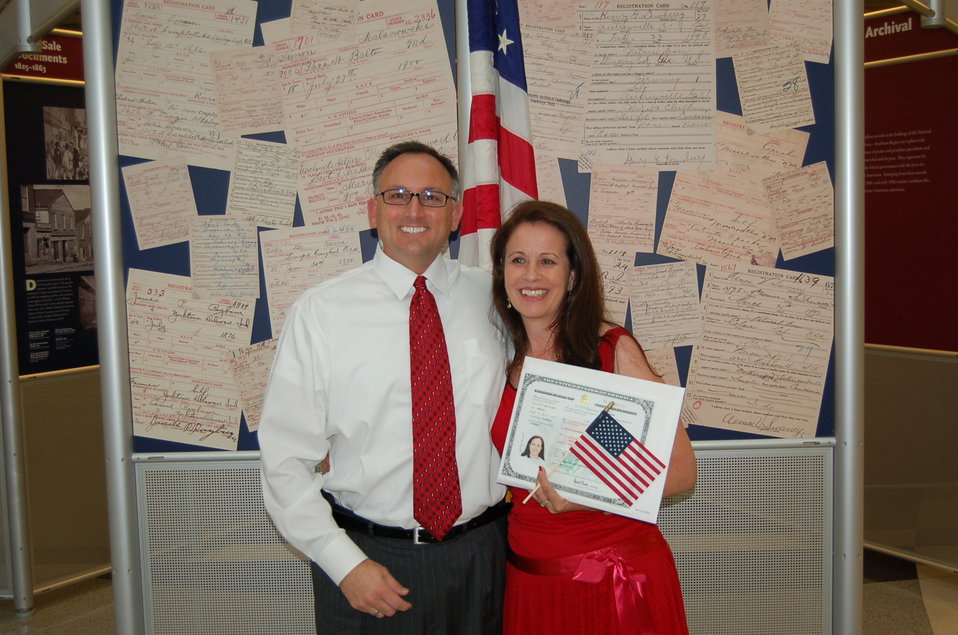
New Citizens